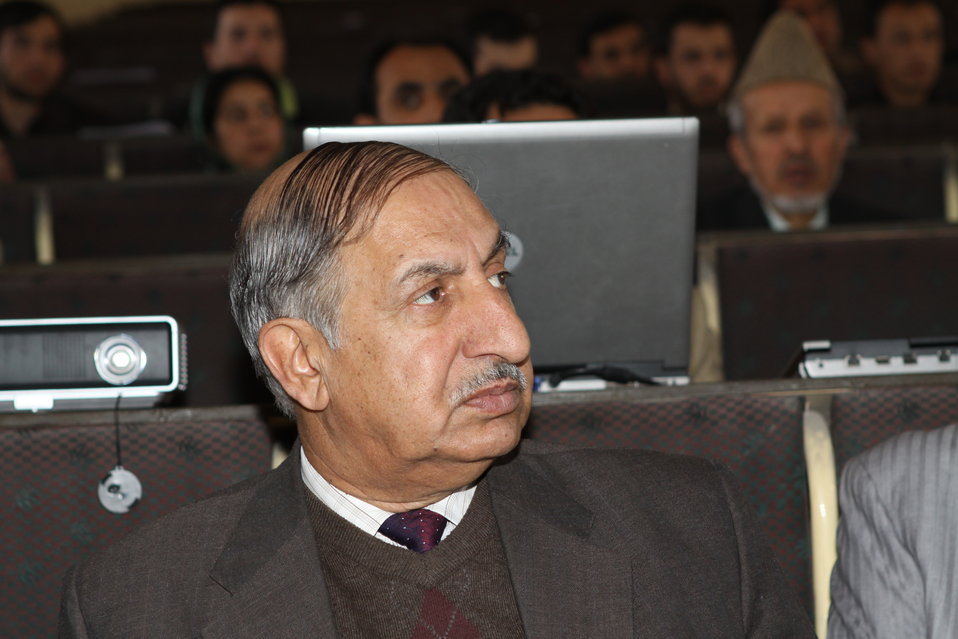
Female University Students Complete Internship

Kabul, Afghanistan | March 16, 2011 – In response to a demand for qualified Afghan engineers, Kabul University celebrated completion of an intensive five-month Mentor Protégé Training Program today by 10 female fourth year university students. The Training Program is a joint effort between the Government of the Islamic Republic of Afghanistan, the U.S. Agency for International Development (USAID), and the Universities of Kabul, Kandahar, Alberoony in Kapisa, Shiekh Zayed in Khost. The graduation ceremony highlighted collaboration with these national institutions in building the technical skills of young Afghans, made possible by USAID.

Four of the interns are engineers, while the remaining six are from the faculties of computer science, economics, and psychology.

Speaking about the event, H.E. Minister of Public Works Abdul Qudus Hamidi said, “The future of Afghanistan lies in developing the skills of our youth, and the engineering skills of these graduates today represent a small but important step forward for the country.”

Keynote speakers at the ceremony included H.E. Deputy Minister of Higher Education Abdul Rahim; USAID Senior Deputy Mission Director Robert Hellyer; and Chancellor of Kabul University Professor Hamidullah Amin. Approximately 150 people, including current and former students attended the graduation.

Launched last year, the Mentor Protégé Training Program has provided qualifying students the opportunity to intern with USAID’s Strategic Provincial Roads-South and East Afghanistan project and gain practical experience in a real work environment. The goal of the program was to offer interns the opportunity to gain hands-on experience to reinforce their formal studies. A total of 30 students from four national universities have benefitted from this program.

“The promotion of women’s rights is integrated into the overall U.S. Government development strategy and can be found in key programs, including education, healthcare, security, rule of law, political participation, agriculture, and economic development,” said Robert Hellyer. “The U.S. Government is committed to the Afghan leadership of programs that directly enhance development, particularly as it relates to women’s issues.”

This event also highlighted the learning achievements of students and emphasized the importance of hands-on internship programs. The curriculum is designed to instill students with the knowledge and confidence to qualify for engineering positions upon completion of their fourth year at their respective universities.